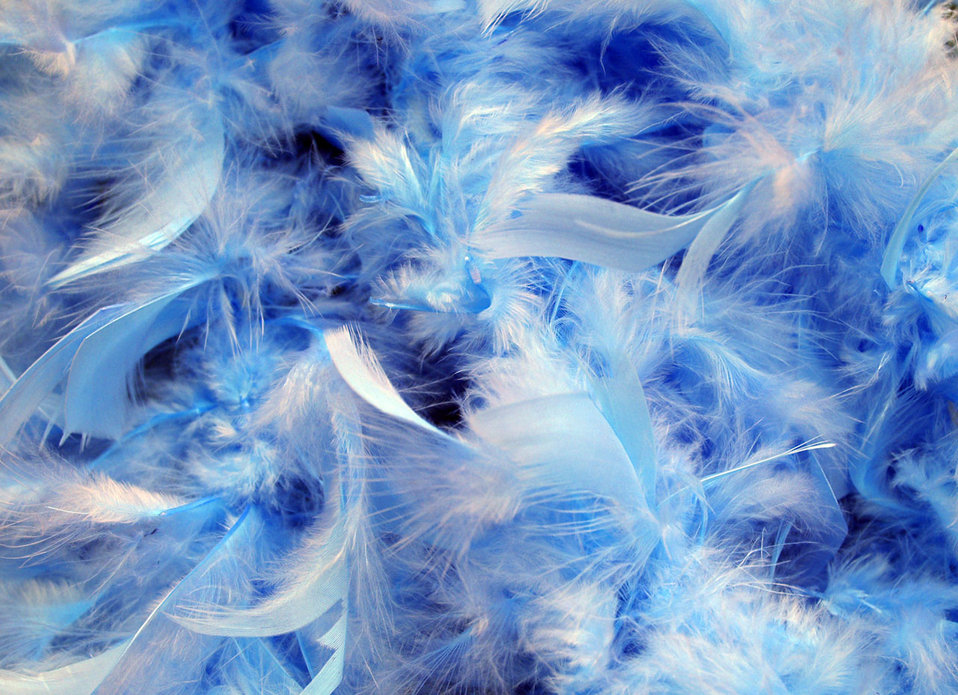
Blue feathers background.